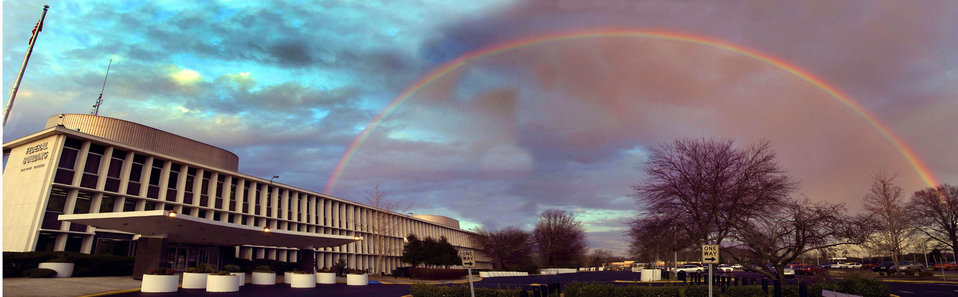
Rainbow Over DOE Oak Ridge Federal Building

DOE photo Lynn Freeny